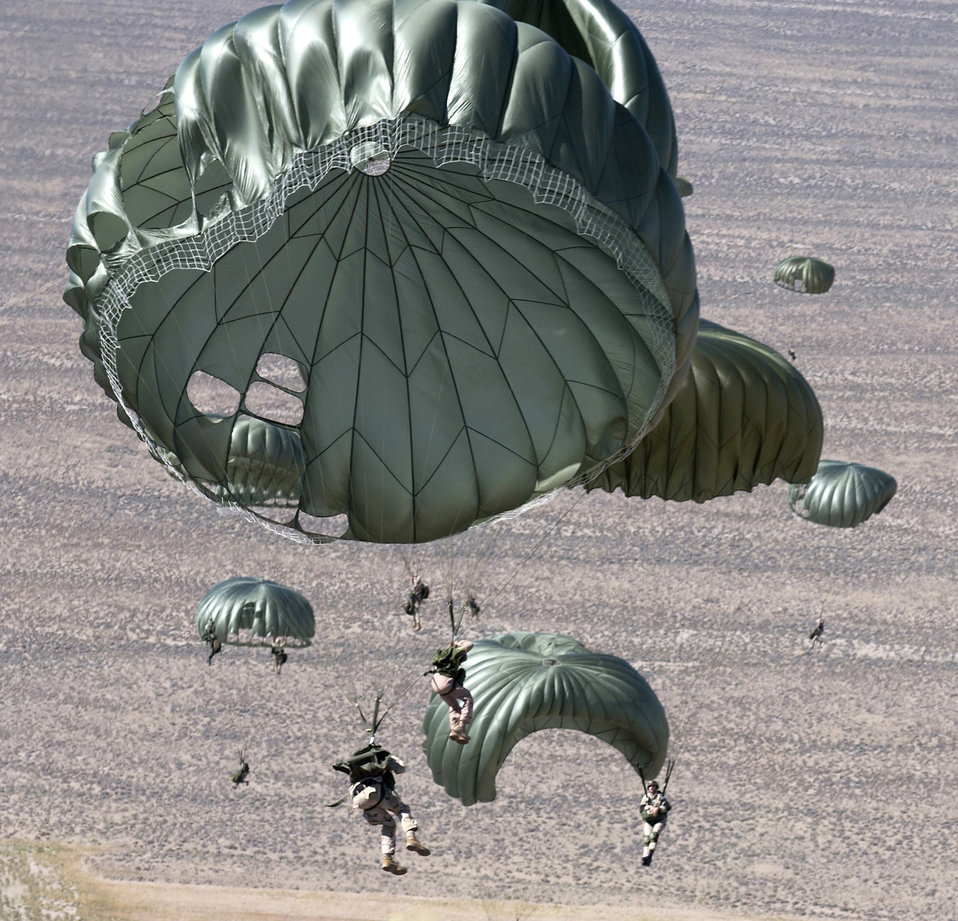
Jumping for Red Flag

Pararescuemen from the 414th Combat Training Squadron and parachutists from the 820th Red Horse Squadron from Nellis Air Force Base, Nev., jump out of a C-130 Hercules Sept. 1 over the Nevada Test and Training Ranges in support of Red Flag Exercise 06-2.